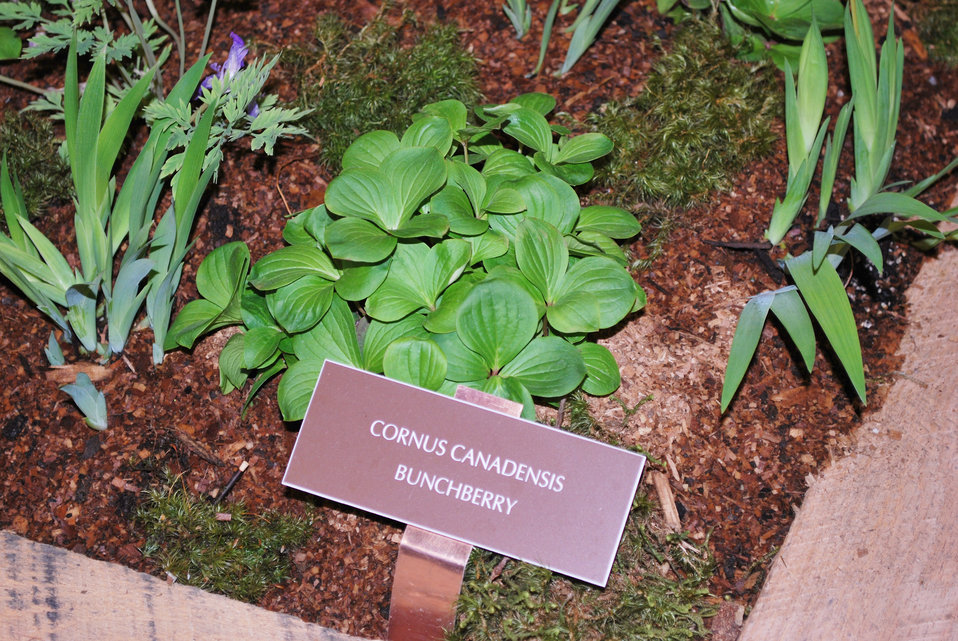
EPA's display at the Philadelphia Flower Show, 2014

The white dogwood-like flower and red berries of bunchberry (Cornus canadensis) make it stand out in the understory of spruce and fir forests in northern North America. This plant was part of our display at the 2014 Philadelphia Flower Show.